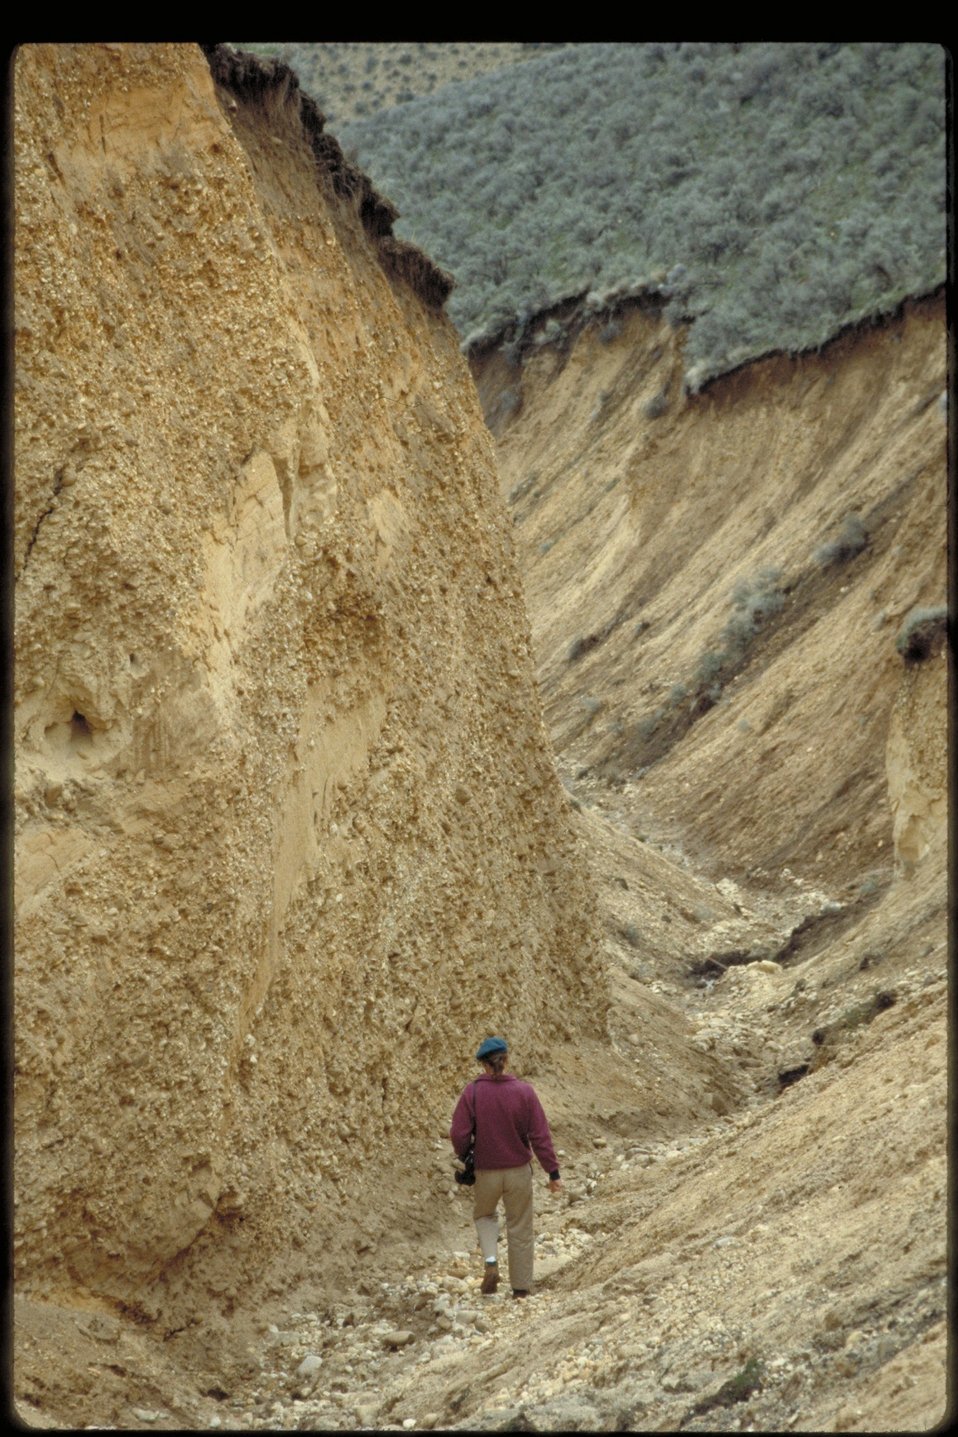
Boise Front erosion Four Rivers Field Office LSRD Lower Snake River District